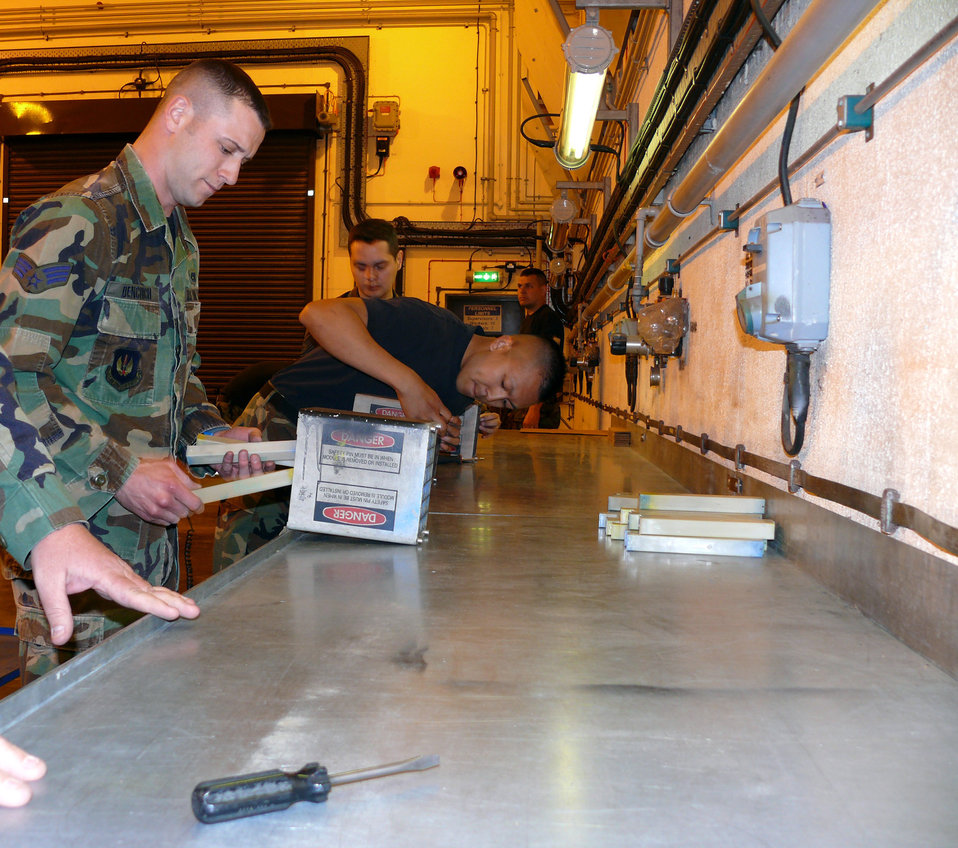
Munitions squadron tests AFSO 21 initiative

Senior Airman Jason Benchich (left) stuffs a chaff and flare canister with simulated munitions while Senior Airman Lester Delvalle (center) prepares a new cansiter at the start of a processing line April 21 at Royal Air Force Lakenheath, England. The Airmen are testing an Air Force Smart Operations for the 21st century initiative. The Airmen are assigned to the 48th Munitions Squadron.